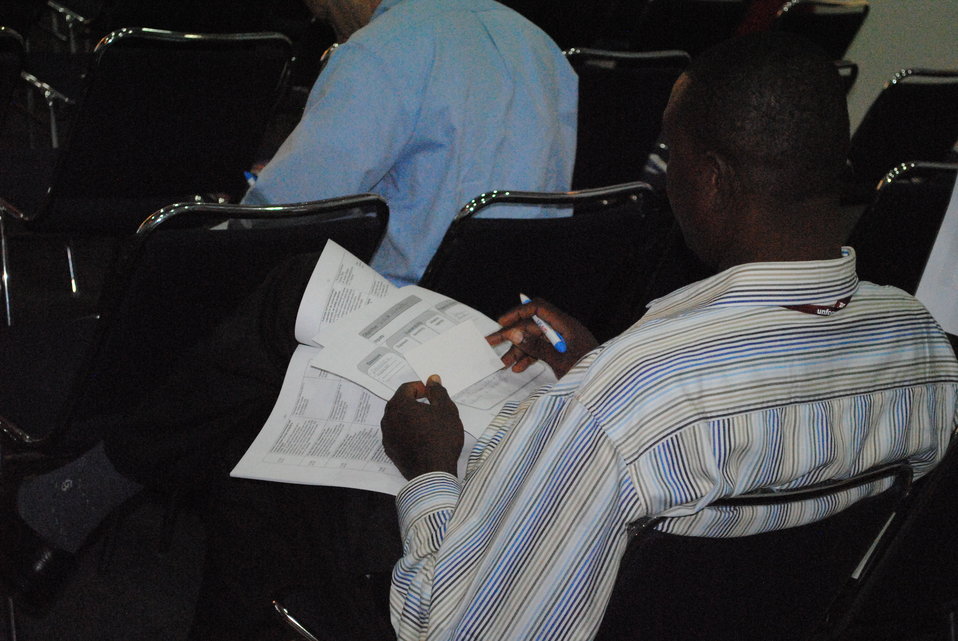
Observers Take Notes at a U.S. Center Side Event

Observers take notes at the side event, 'Stakeholder Driven Approach to Adaptation -- East Caribbean,' at the U.S. Center at COP-16 in Cancun, Mexico, on November 30, 2010.